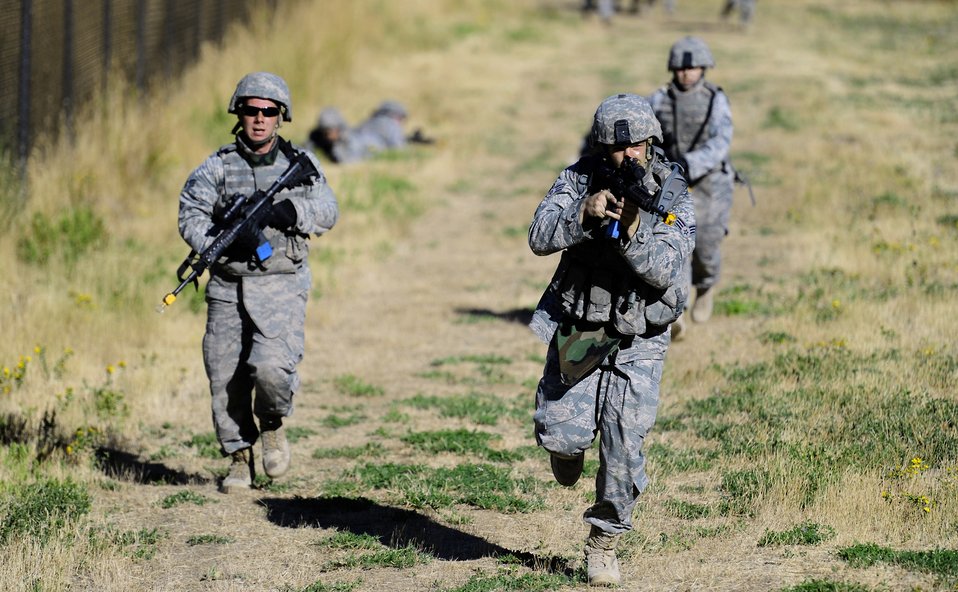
Stop! Don't move.

Airmen from the 75th Security Forces Squadron practice combat patrols during week-long Combat Readiness Training Course Sept. 24, 2010, at Hill Air Force Base, Utah. The CRT course provides Airmen with the basic skills needed to deploy, to include tactical movements, land navigation and self aid buddy care.